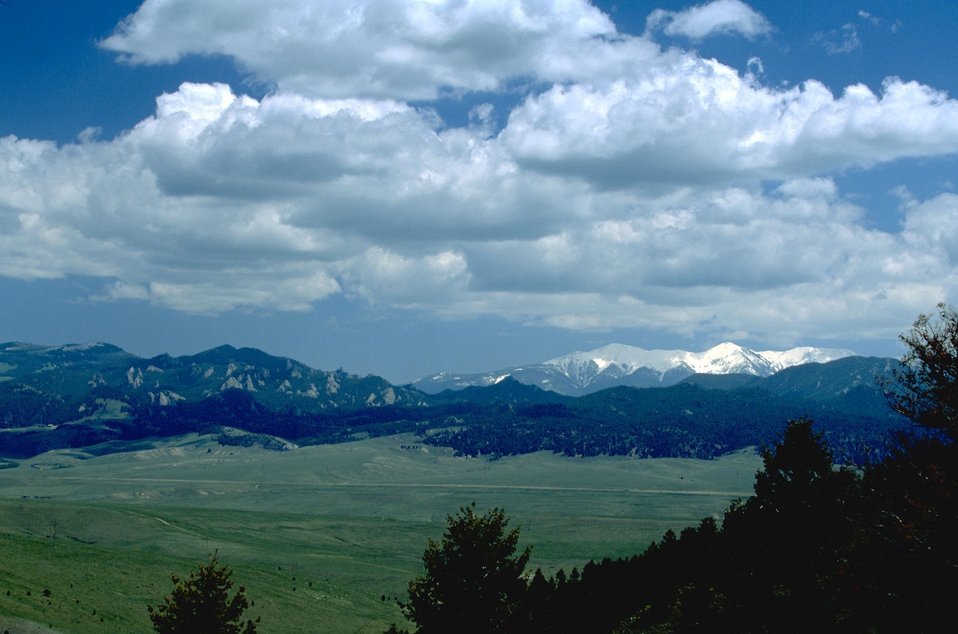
Menacing clouds hovering above a mountain valley in the Humbug Spires Wildeness Study Area